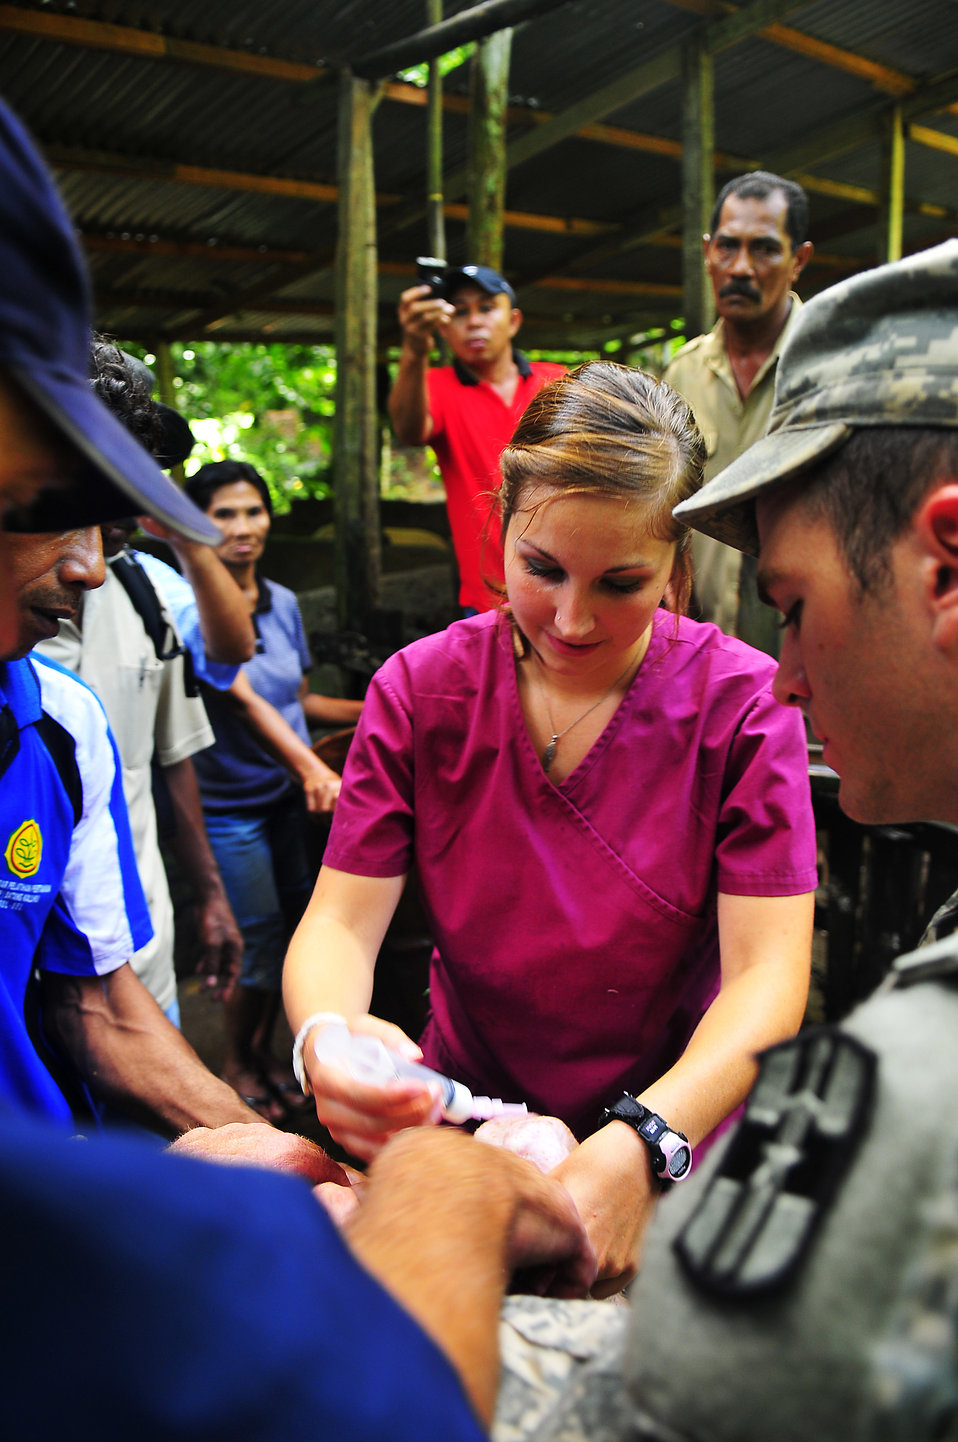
Veterinary Student Volunteer Machuk Gives a Penicillin Shot to a Pig

Becky Machuk, a veterinary student volunteer from World Vets, gives a penicillin shot to a pig during a Pacific Partnership 2010 veterinary civic action program held at the Amahusu village on July 29, 2010. The Military Sealift Command hospital ship USNS Mercy (T-AH 19) is in Ambon, Indonesia, participating in Sail Banda 2010. Mercy’s participation features medical and dental care clinics and construction projects in and around Ambon, as well as on Seram Island.